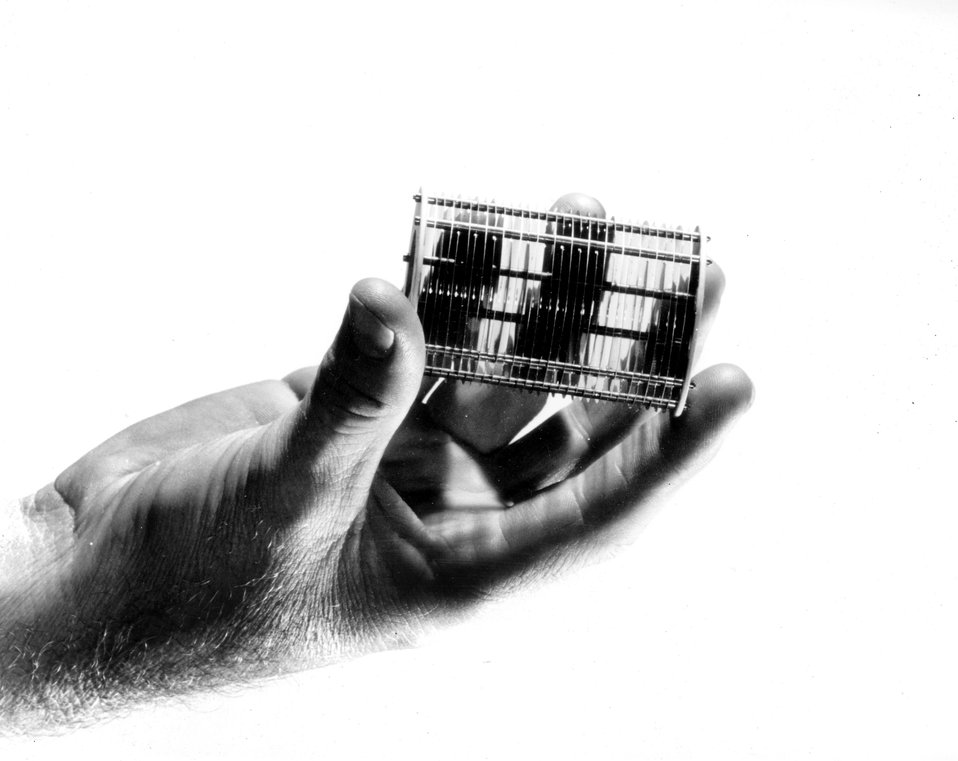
Model of a highly sensitive neutron detector developed at the Atomic Energy Commission's Oak Ridge National Laboratory as part of the Liquid Metal Fast Breeder Reactor research program. c. 1972